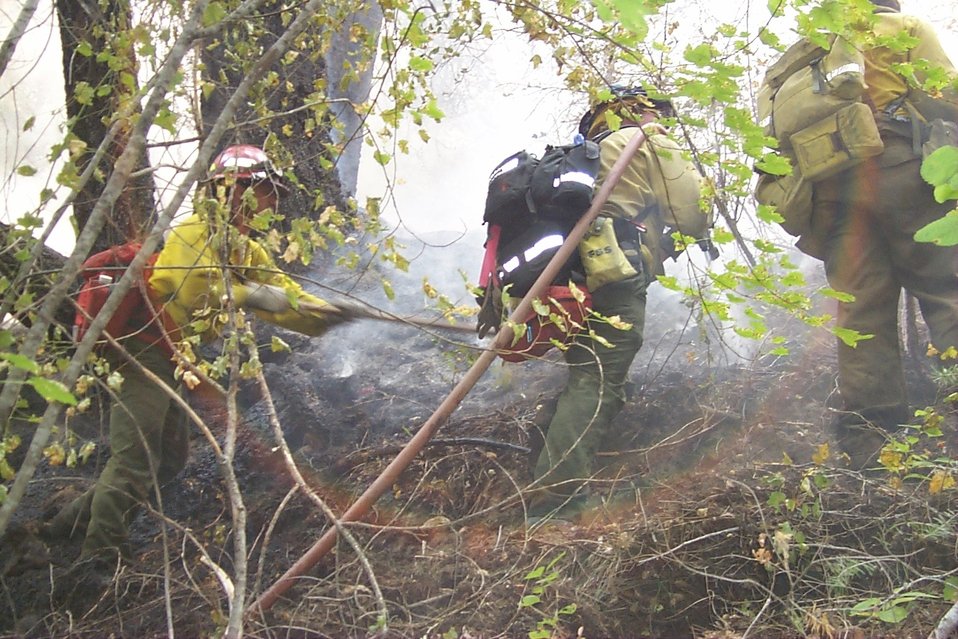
Fire fighters Fire Clearwater Fire Salmon Field Office USRD Upper Snake River District